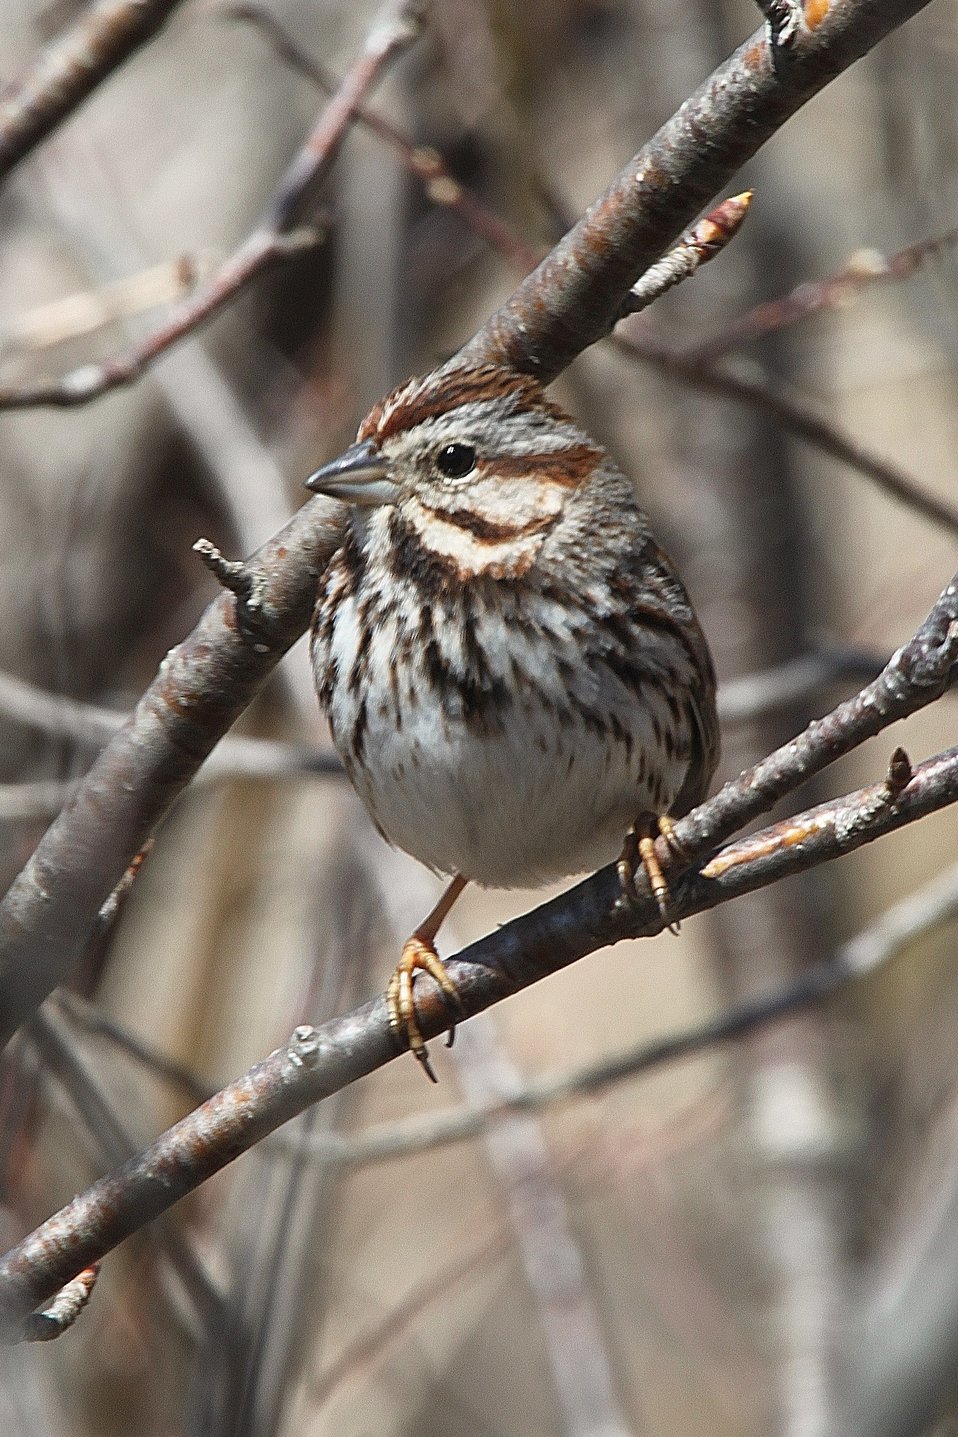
Song sparrow at Missisquoi National Wildlife Refuge